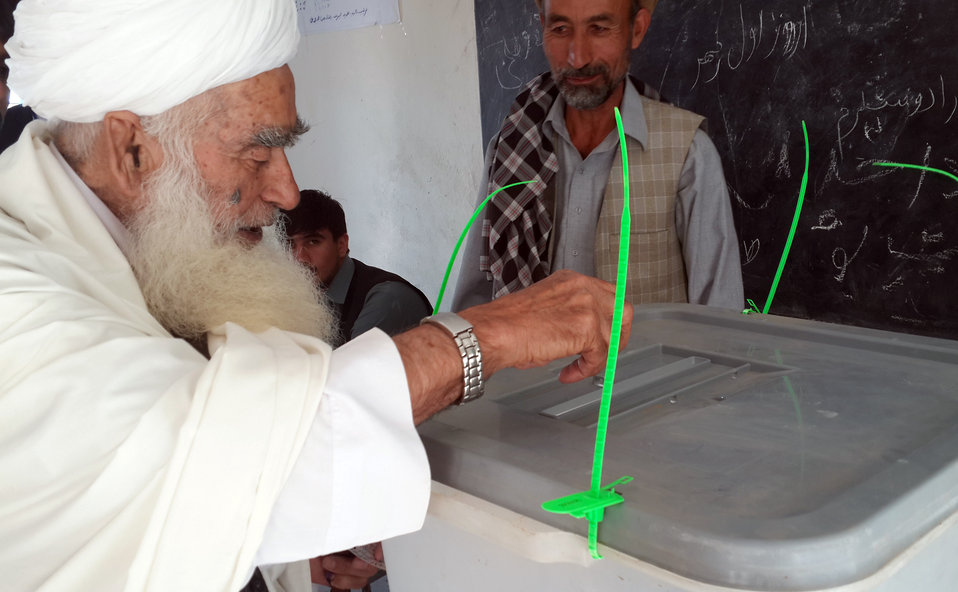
An elderly casts his vote for his favorite presidential candidate in central Parwan province.